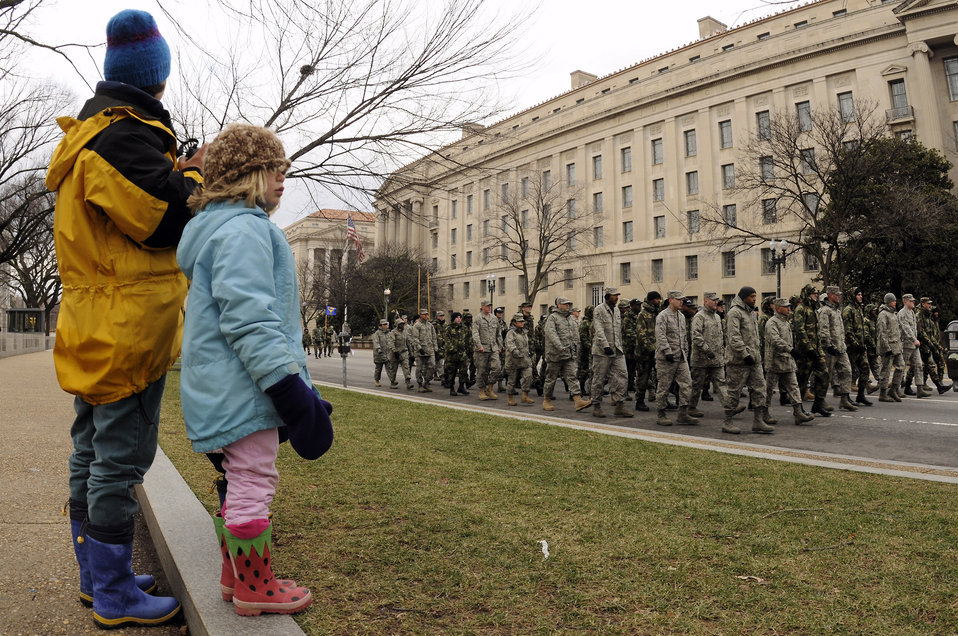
Practice makes perfect

A mother and daughter watch as a flight of Airmen from the Air Force District of Washington march down Constitution Avenue during a practice run of the inauguration parade for President-elect Barack Obama Jan. 11 in Washington, D.C.